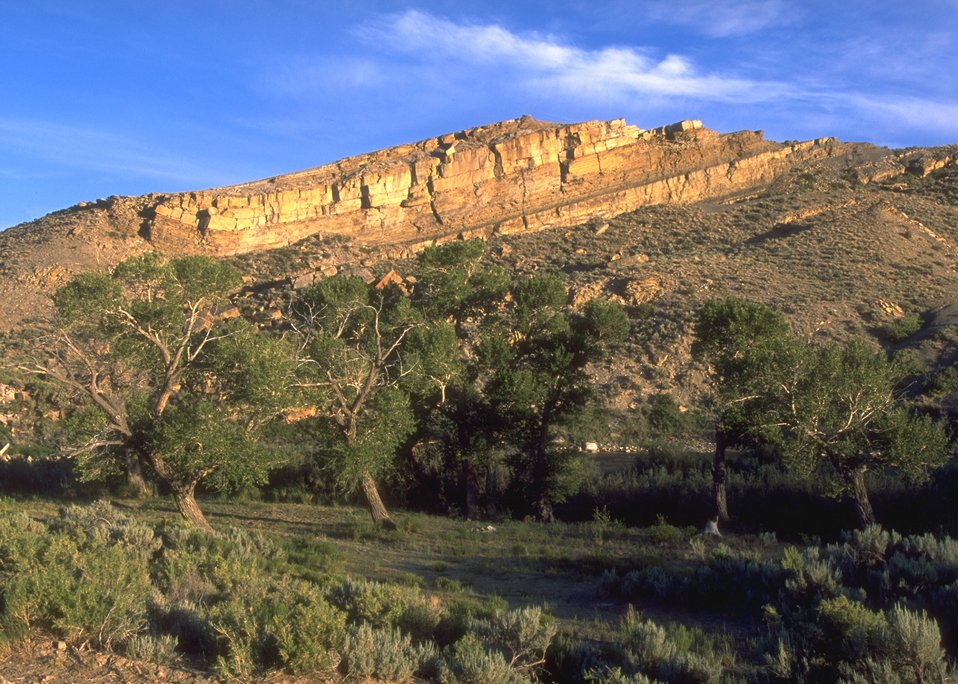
Landscape along the Alcova/Seminoe Back Country Byway, Rawlins Field Office.